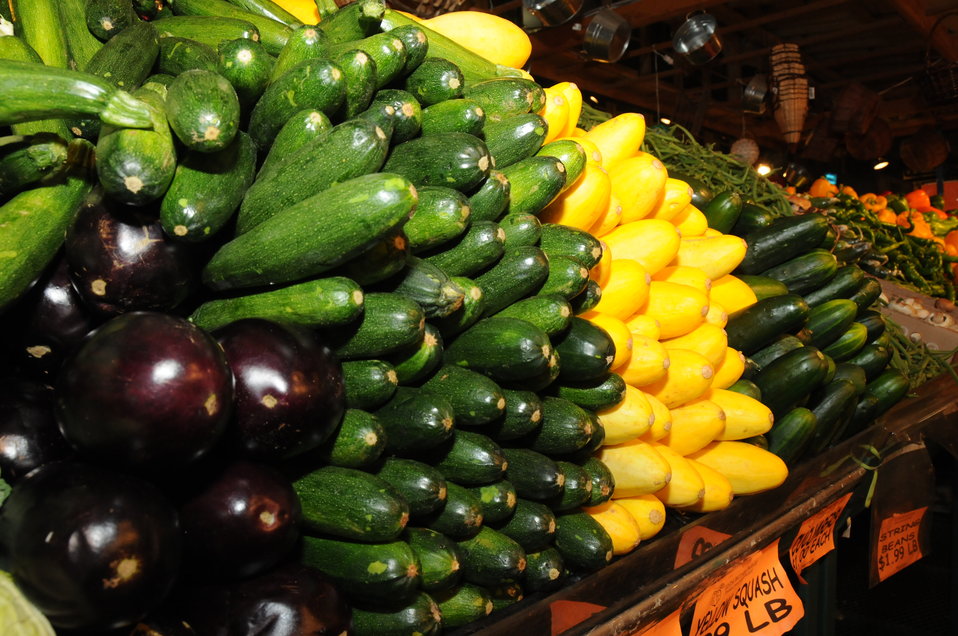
The Reading Terminal Market offers produce fresh from the field to the people of Philadelphia, PA on April 3, 2009. There are Amish specialties, fruits, vegetables, meats, seafood, and poultry. Reading Terminal Market opened for business in 1892 with approximately 78,000 square feet and almost 800 spaces for vendors. The Market was revitalized in the 1990’s and today is still the gastronomic bazaar that its original planners had envisioned. Many of the historic Market stands survived the reconstruction and are once again filled with local produce, fresh eggs, milk, meats, poultry, seafood, handmade crafts, jewelry, and clothing. The Market is home to more than 80 merchants, two of whom are descendants of the original stand holders from a century before.